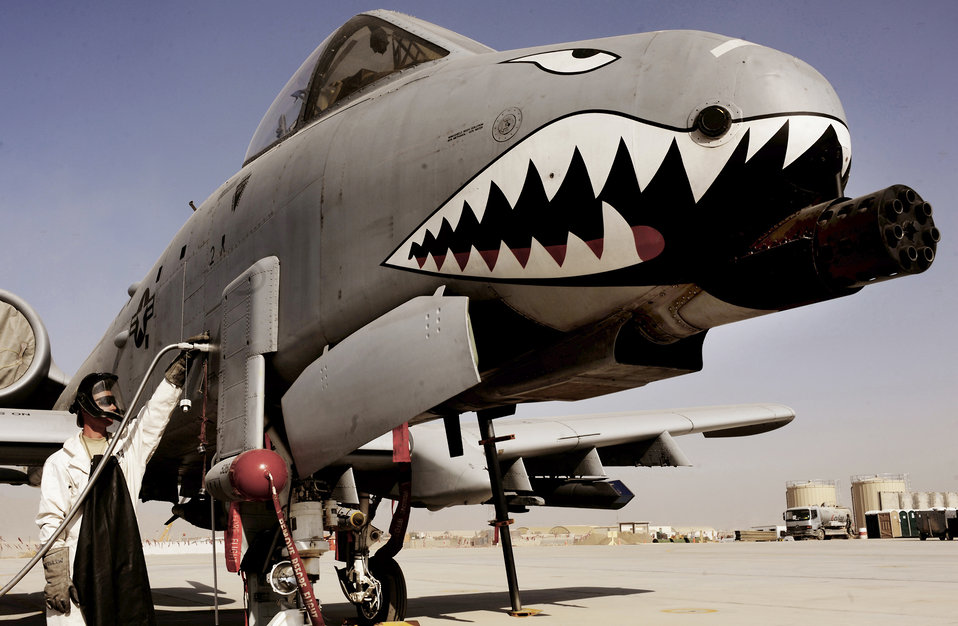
Fill 'er up!

Staff Sgt. Tom Wilson pumps liquid oxygen into an A-10C Thunderbolt II Jan. 11, 2011, at Kandahar Airfield, Afghanistan. Sergeant Wilson is a crew chief assigned to the 451st Expeditionary Aircraft Maintenance Squadron.